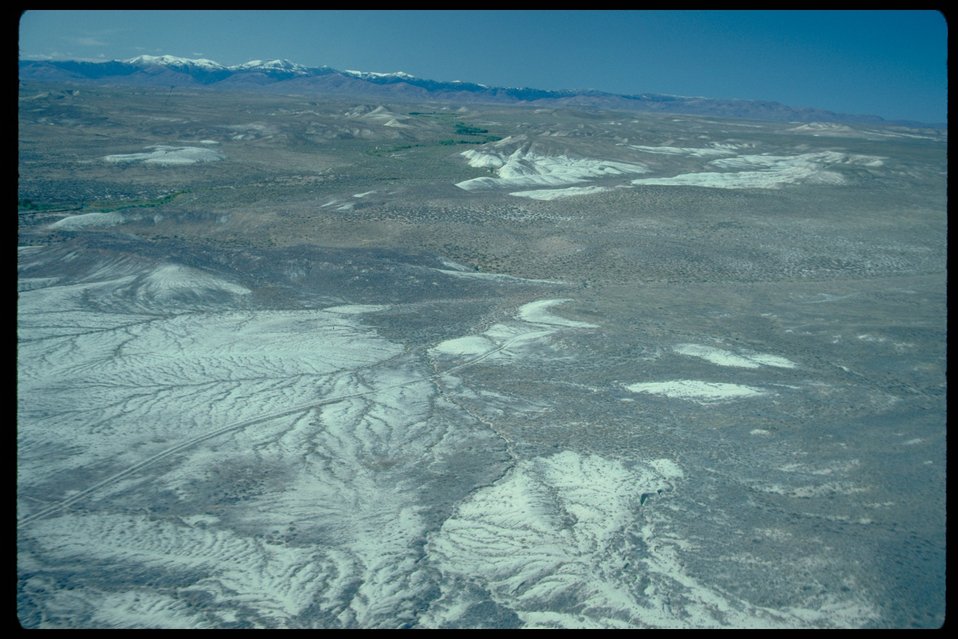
Oregon Trail near Wildhorse Butte Lower Snake River District